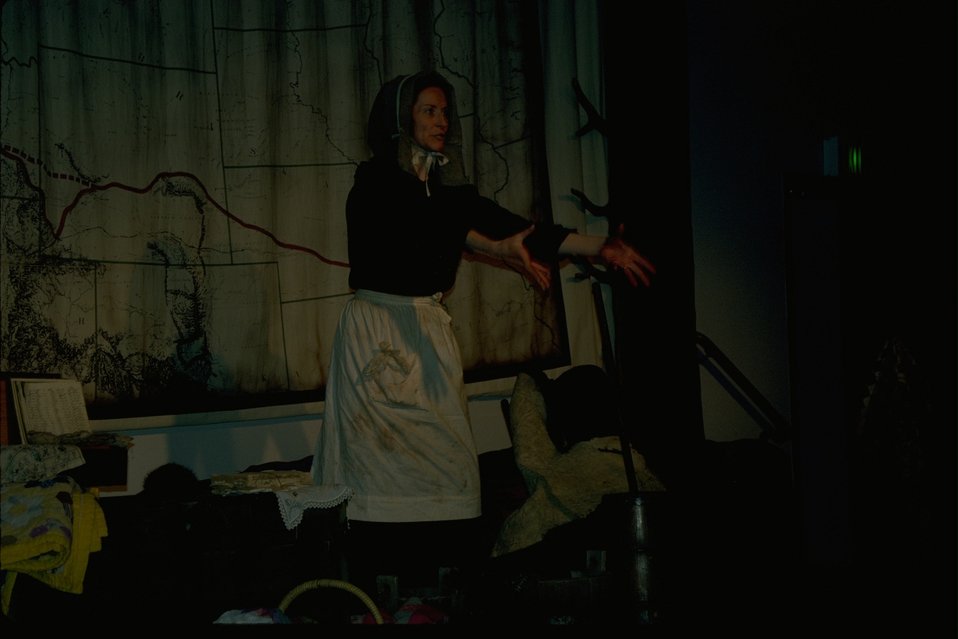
Theater performance --Fanny-- at the NHOTIC.